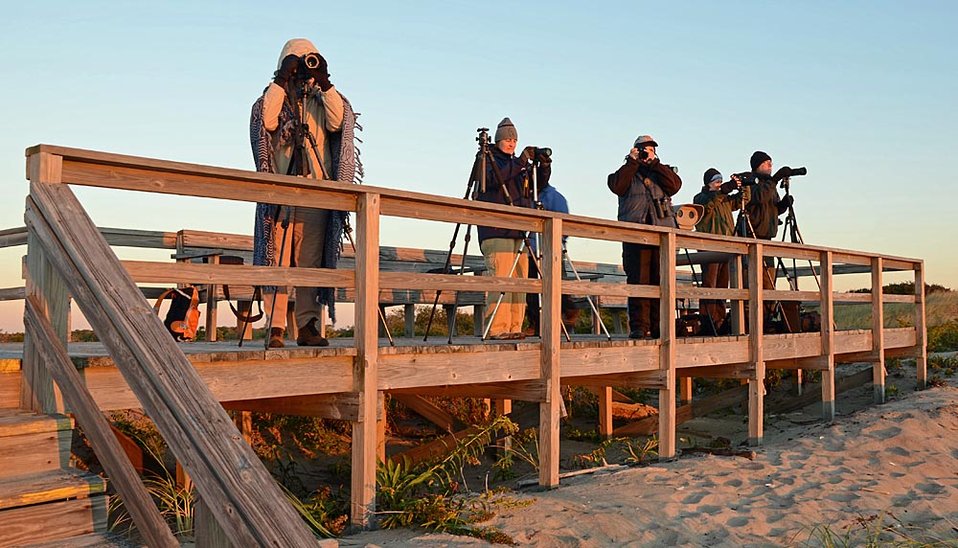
Photographers

Parker River National Wildlife Refuge, MA.